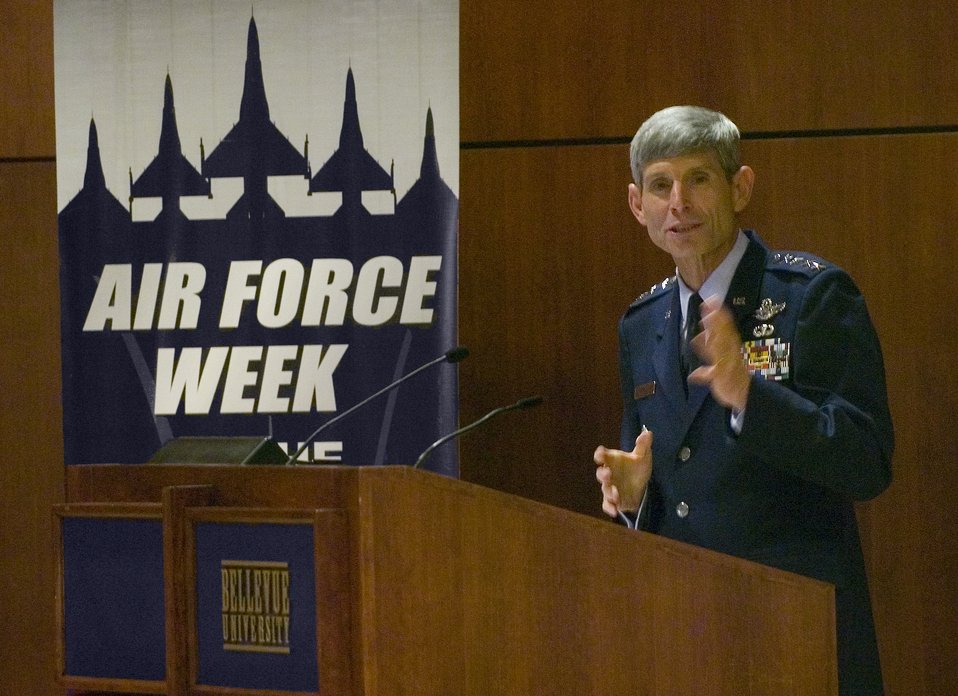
Gen. Schwartz outlines vision in speech to Omaha leaders

Gen. Norton A. Schwartz was the keynote speaker at the Global Leadership Forum held Aug. 15 at Bellevue University in Nebraska during Air Force Week in the Heartland. General Schwartz is the Air Force chief of staff.